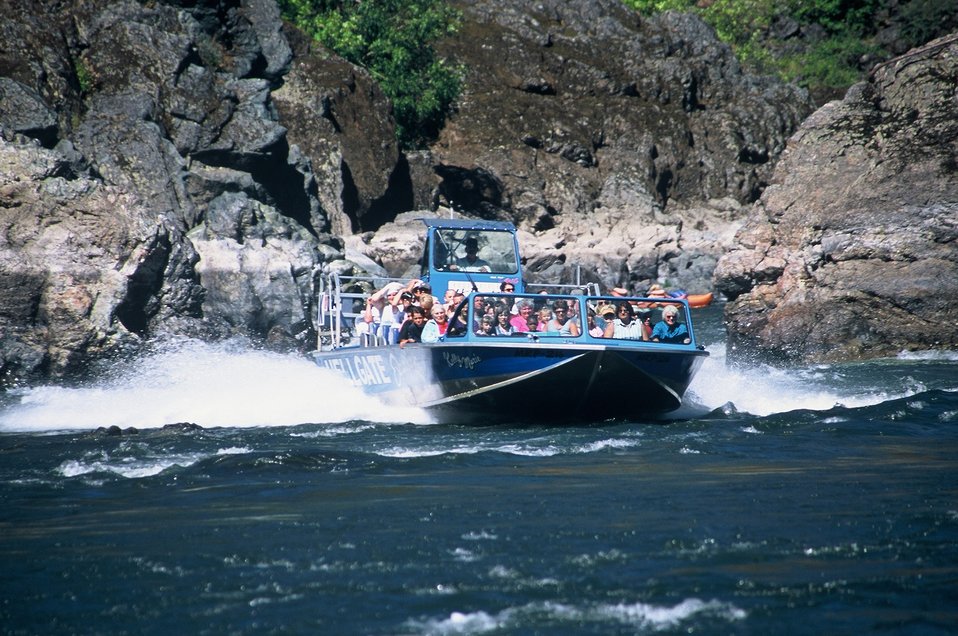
Jet boat at the entrance to Hellgate Canyon